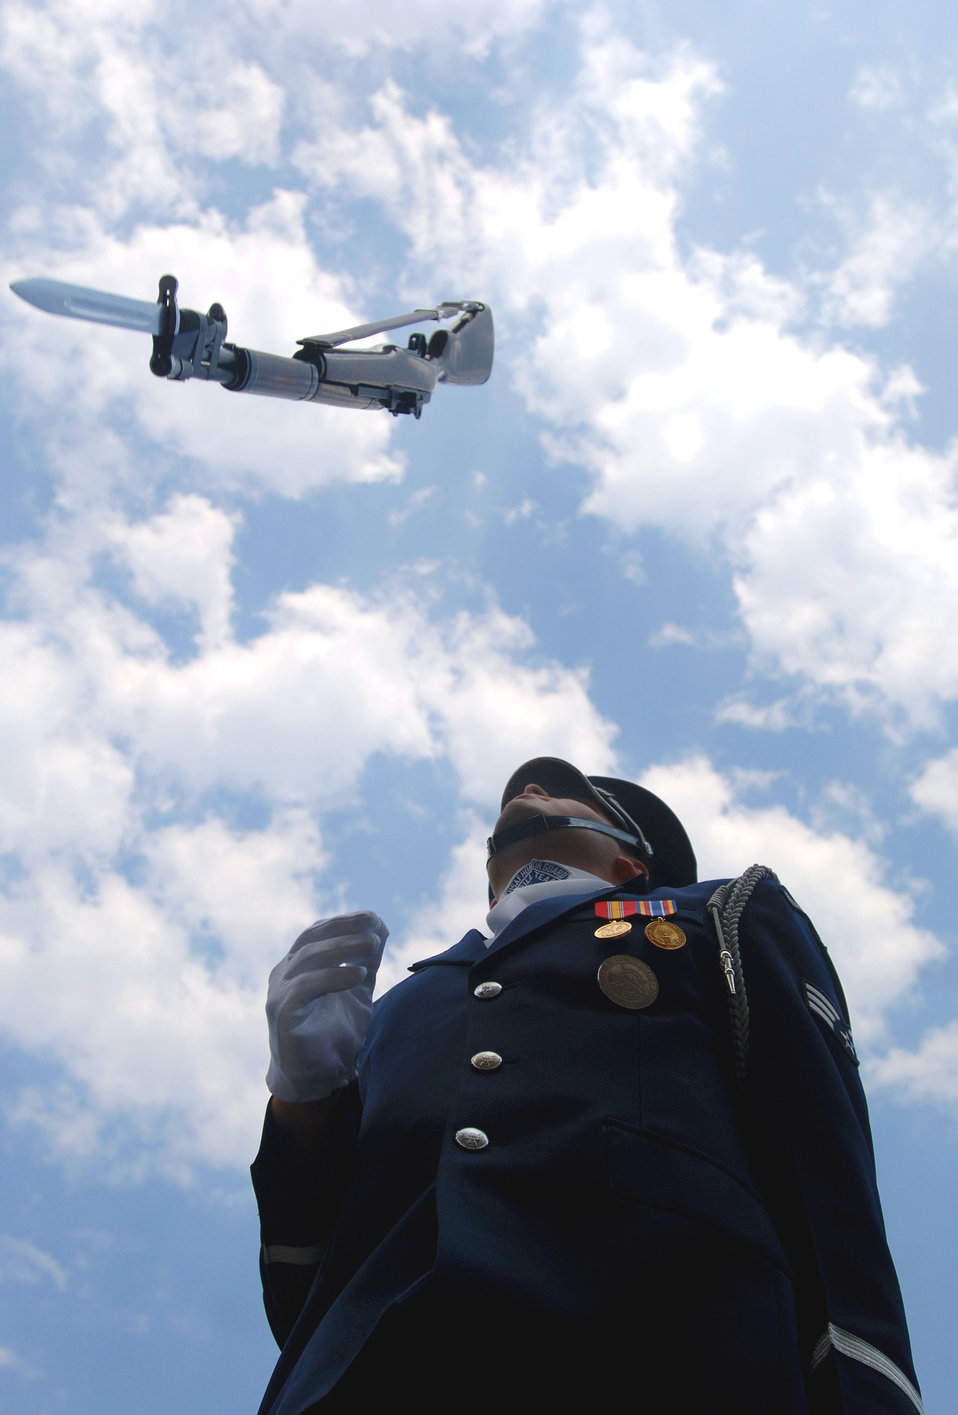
Boston proclamation party gets Air Force Week rolling

Senior Airman James Cashwell of the United States Air Force Honor Guard Drill Team performs during a proclamation ceremony for Air Force Week New England in front of historic Faneuil Hall in downtown Boston Aug. 17. The drill team is the traveling component of the Air Force Honor Guard and tours worldwide showcasing the precision of today's Air Force to recruit, retain and inspire Airmen.